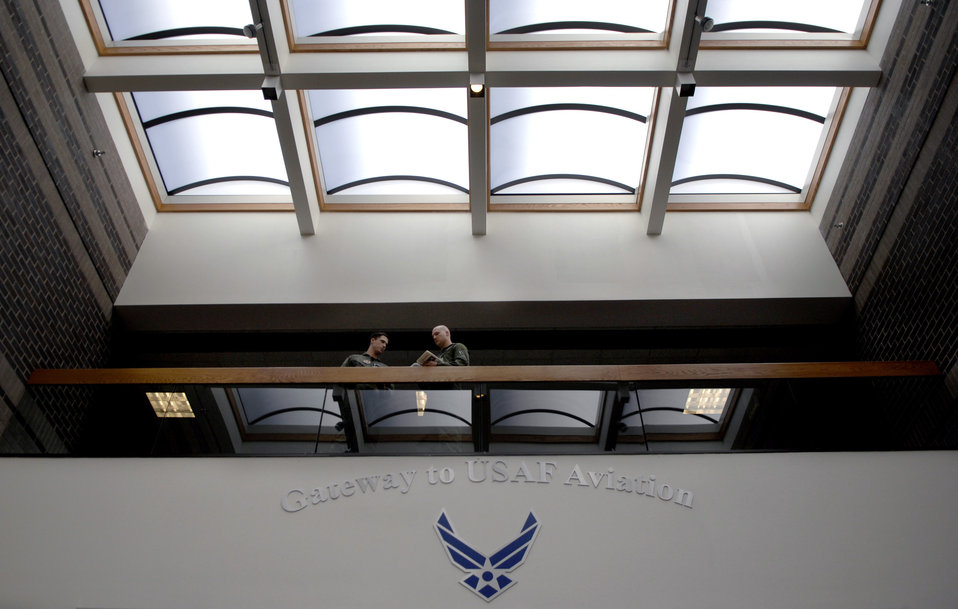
Making a pilot

Student pilots 2nd Lts. Dylan Rudolph and Keith Woods discuss academic ideas at the Doss Aviation Initial Flight Screening Course April 7 in Pueblo, Colo. The purpose of the course is to screen Air Force aviation candidates and prepare them for the more rigorous flight school programs that will place them behind the most powerful, technologically advanced airplanes in the world.